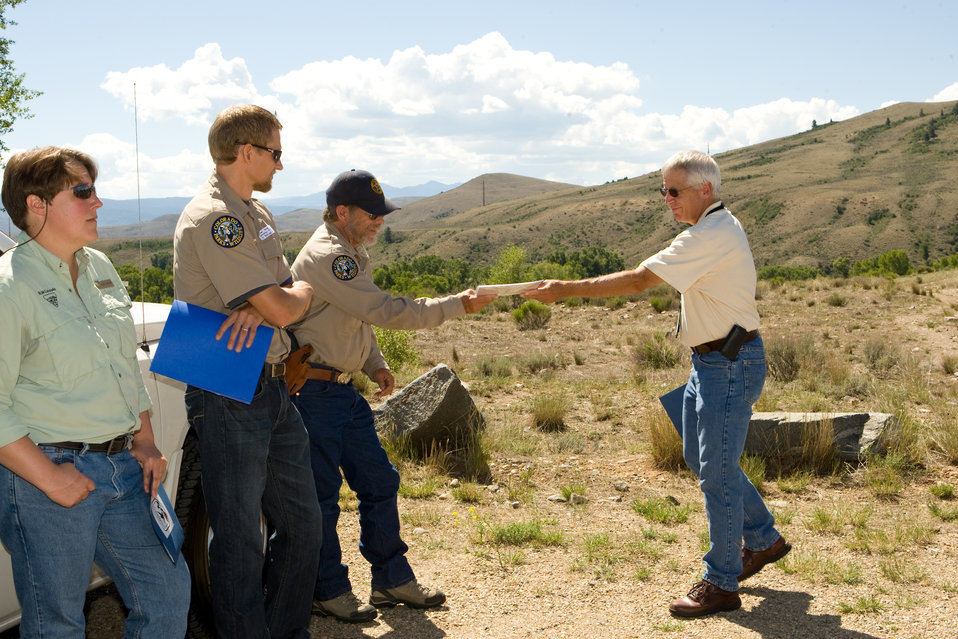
Colorado Rare Plant Conservation Initiative

The Colorado Rare Plant Conservation Initiative (RPCI) is a partnership of 23 statewide and regional agencies, private organizations, and academic institutions working to conserve 121 rare plants in Colorado. As part of these efforts the group developed the Colorado Rare Plant Conservation Strategy, developed Best Management Practices to reduce energy development impacts, addressed climate change, and developed focused strategies for the conservation of individual species at eight priority landscapes. The group has also worked to coordinate volunteer efforts for plant conservation across the state.